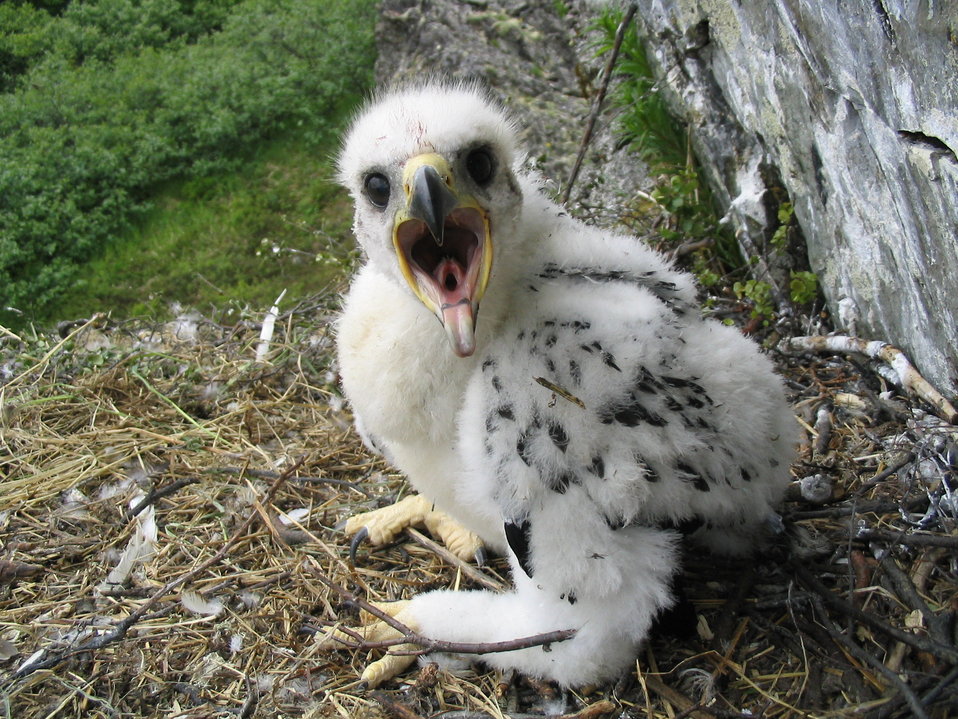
Gyrfalcon nestling

In 2004 a multi-year research project was initiated investigating Gyrfalcons within the YDNWR.

USFWS Yukon Delta NWR